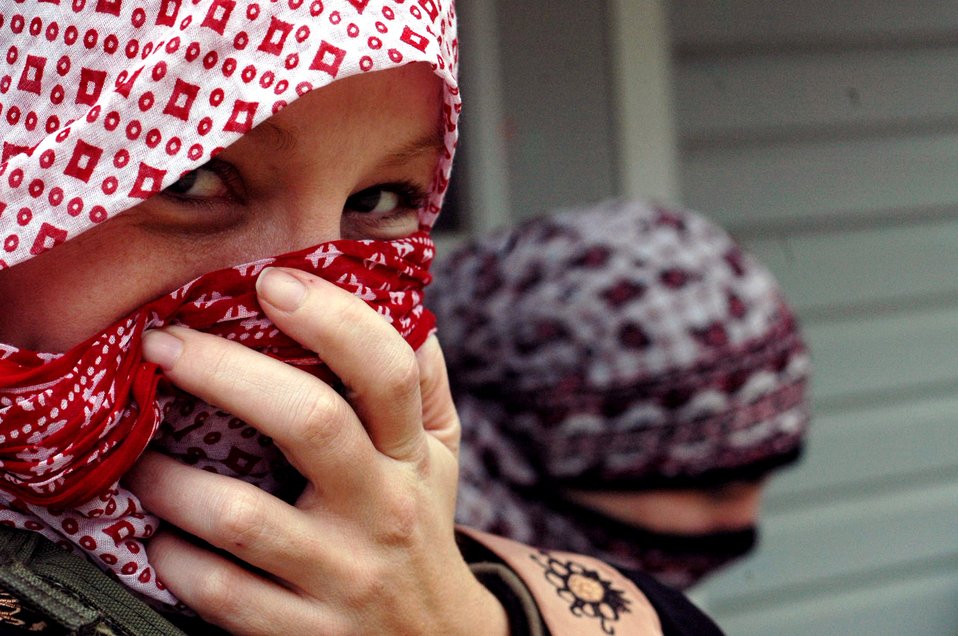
Warrior school

A role player for Exercise Eagle Flag 08-2 participates in a scenario Jan. 19 at Naval Air Engineering Station Lakehurst, N.J. The exercise is operated by members of the Air Force Expeditionary Center's Expeditionary Operations School and 421st Combat Training Squadron at Fort Dix, N.J.